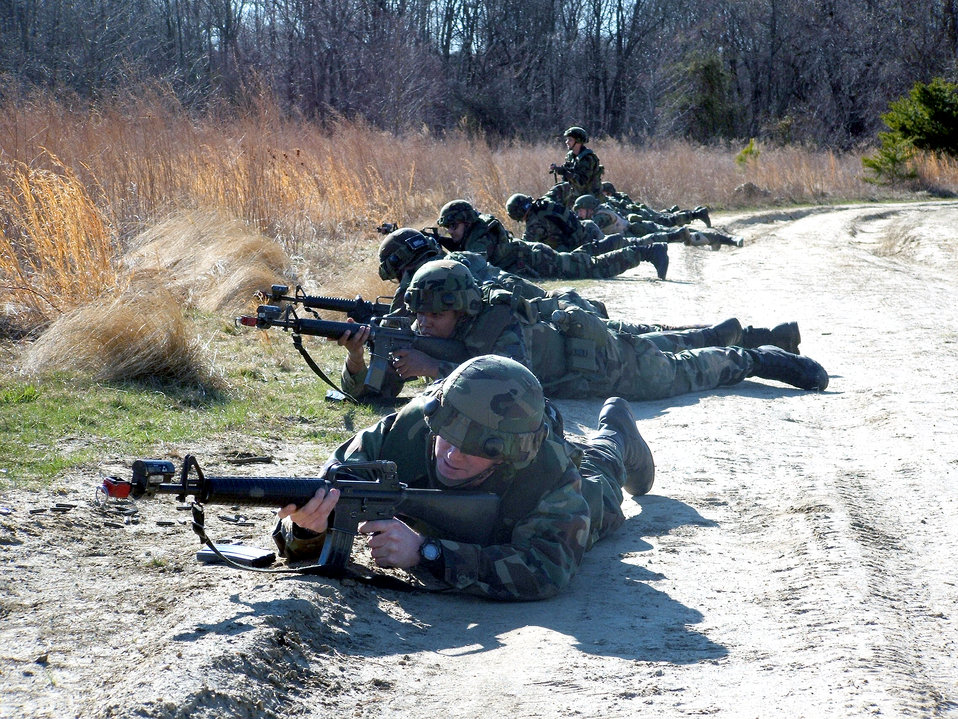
Airmen improve combat tactics

Airmen engage